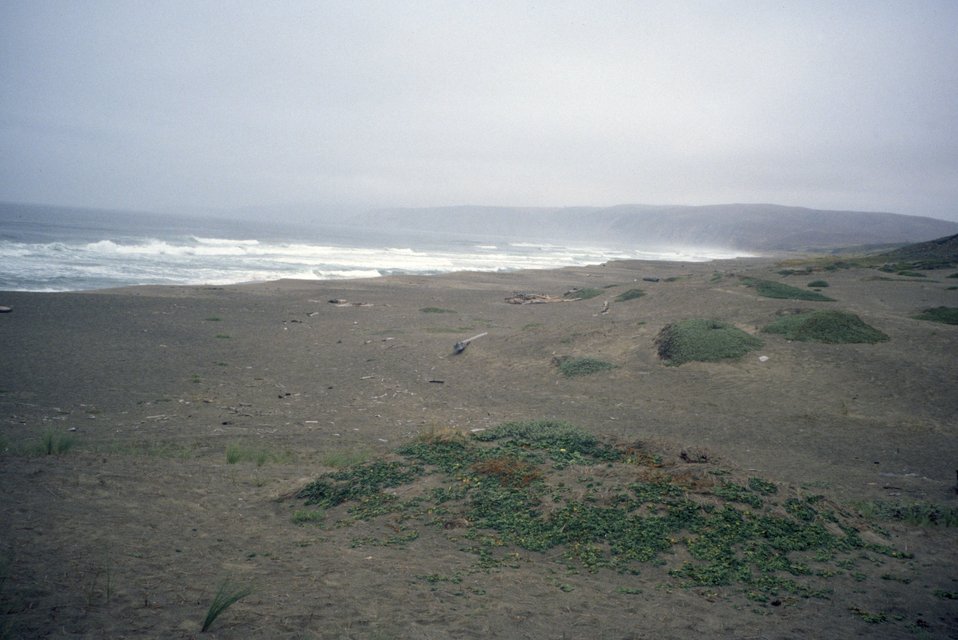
Point Reyes Great Beach. A misty foggy day.